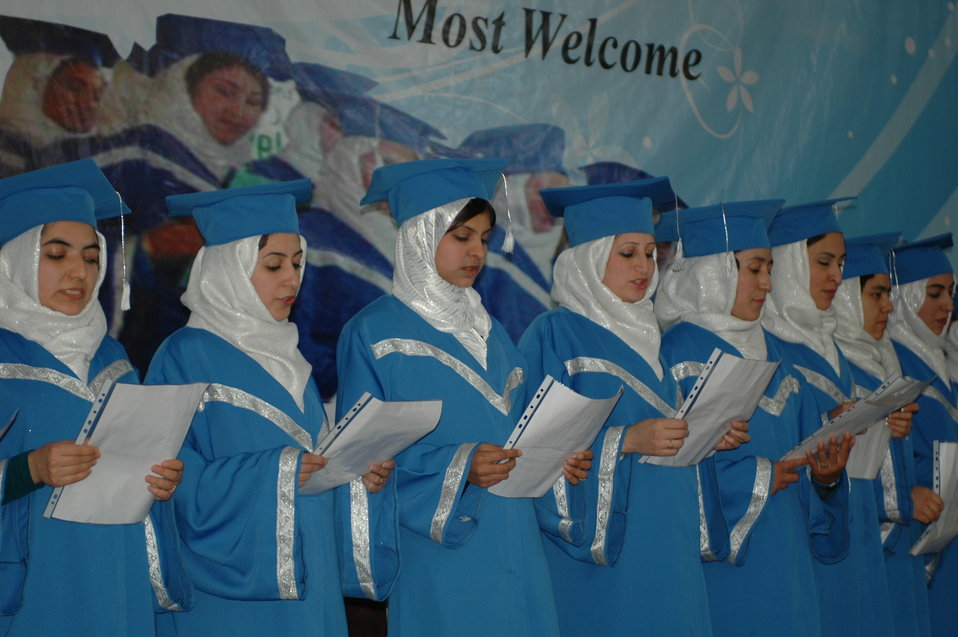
Midwifery2